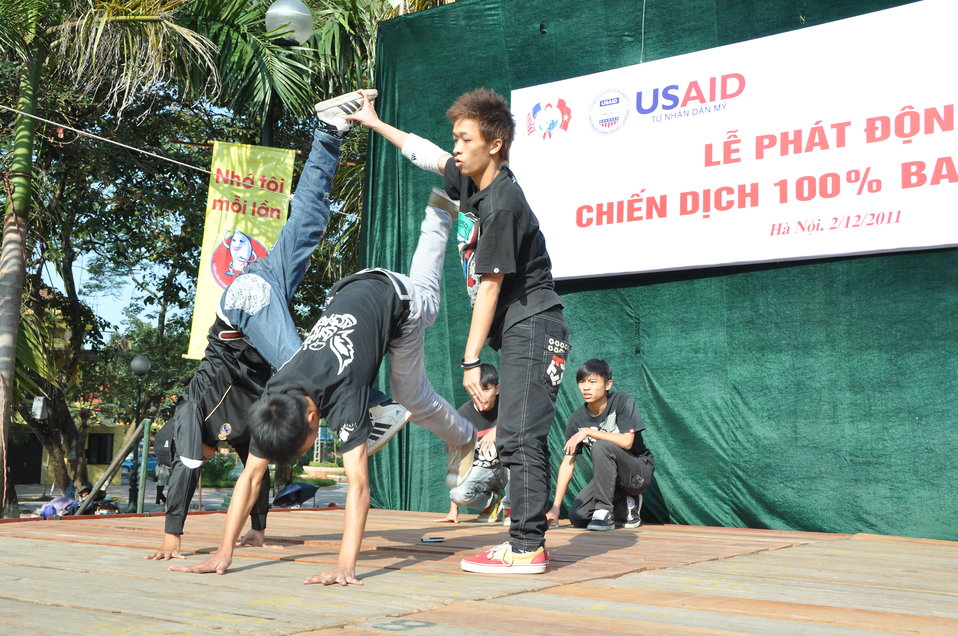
100% Condom Use Campaign Launch, Dec. 2, 2011